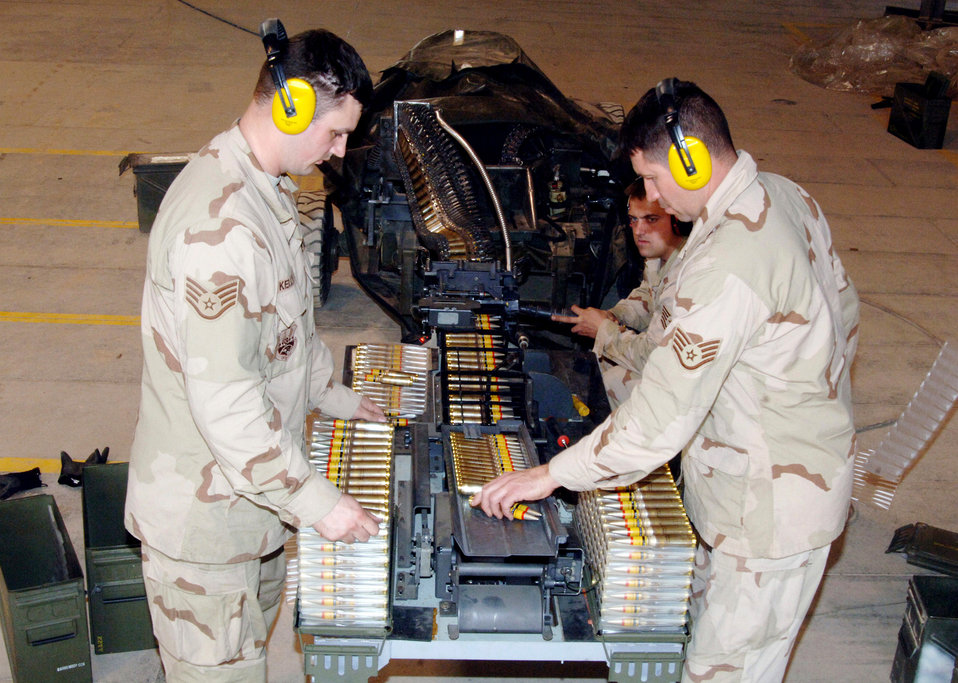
New ammo improves pilot safety, reduces collateral damage

Staff Sgts. Troy Kelly (left) and Bob Blake process PGU-28A/B 20mm cannon rounds through a replenisher tray that feeds the rounds into the universal ammunition loading system Feb. 25 at Balad Air Base, Iraq. The new ammo allows for higher velocity, a greater standoff distance and increased safety for pilots, all contributing to greater effectiveness while providing close-air support. Its use Feb. 26 against insurgents east of Baghdad, Iraq, marked the first in battle for Air Force F-16 Fighting Falcon pilots. Sergeant Kelly is deployed from Aviano Air Base, Italy, and Sergeant Blake is from Syracuse Air National Guard Base, N.Y.